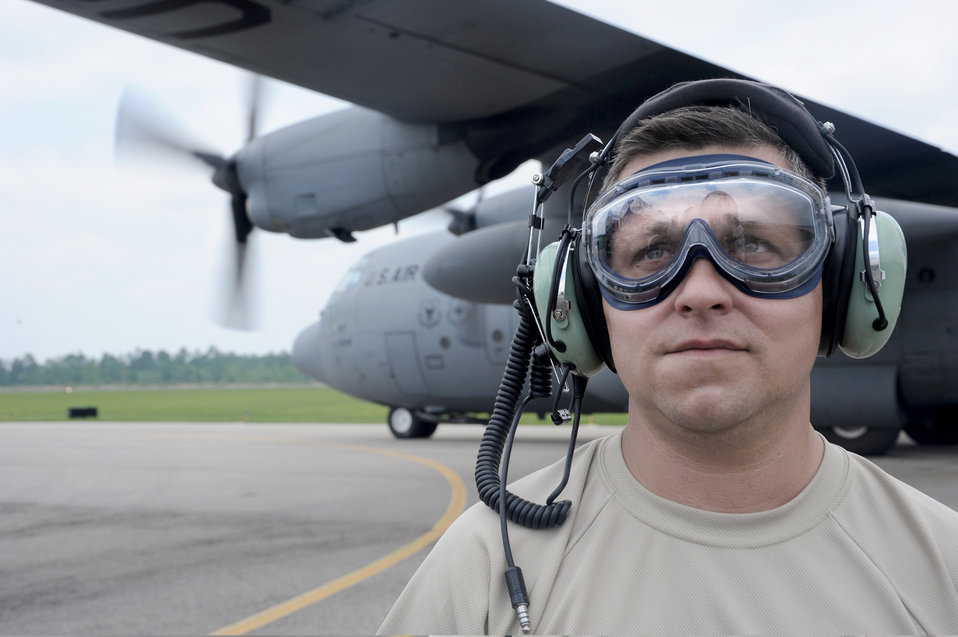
Let's go disperse an oil spill

Staff Sgt. David Vanwinkle prepares to refill a C-130 Hercules with oil-dispersing chemicals May 8, 2010, at Stennis International Airport, Miss. He is an aerial spray maintainer with the Air Force Reserve Command's 910th Aircraft Maintenance Squadron at Youngstown-Warren Air Reserve Station, Ohio. The wing specializes in aerial spraying and is the Department of Defense's only large-area, fixed-wing aerial spray unit.